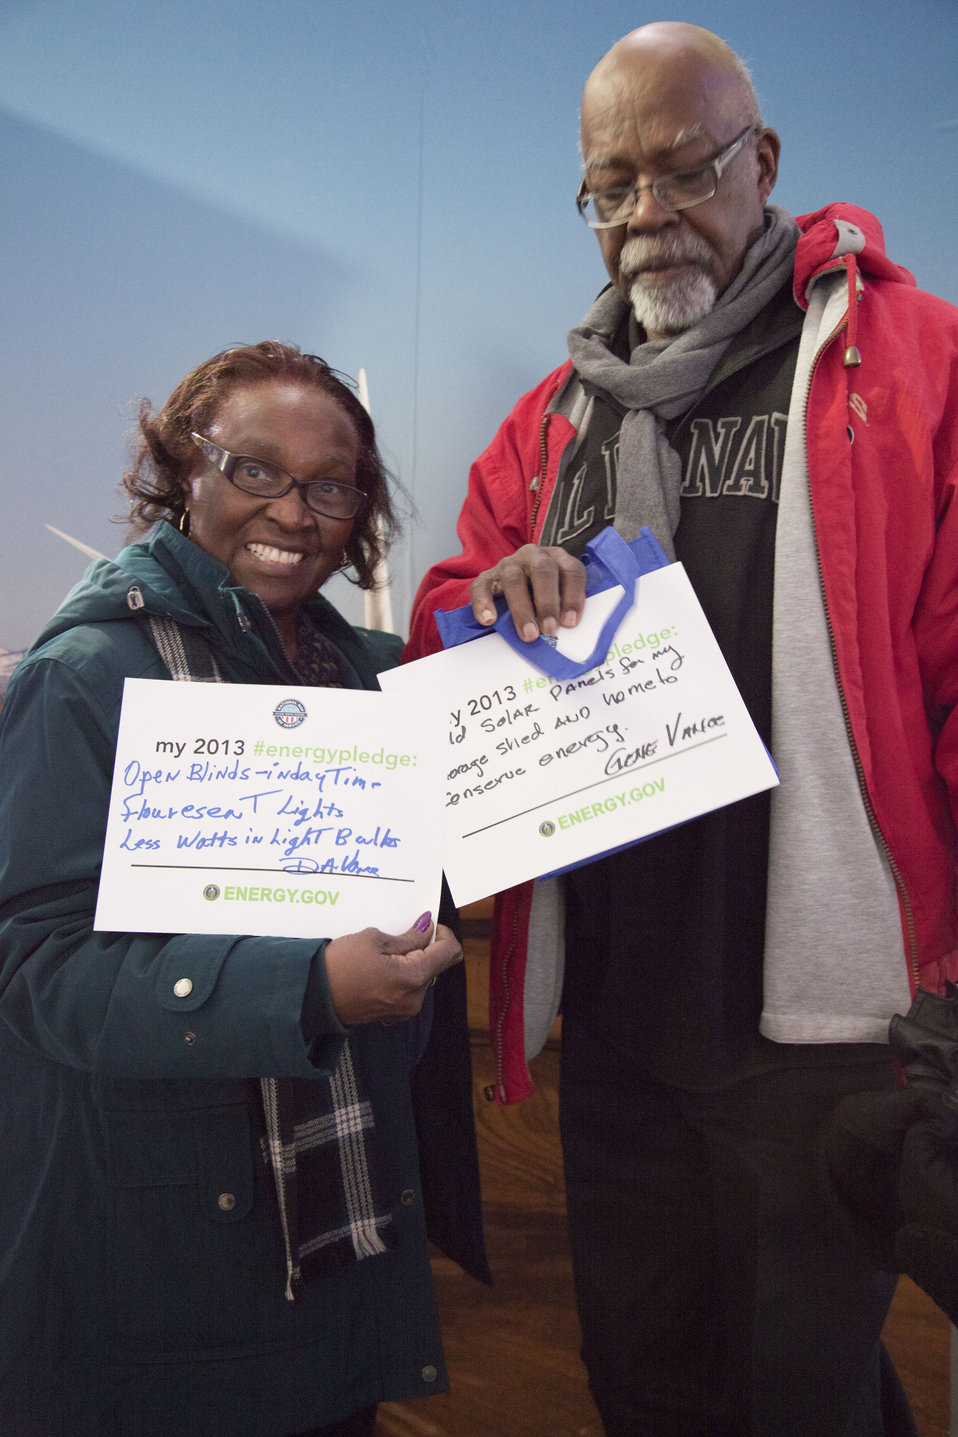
What's your #energypledge?